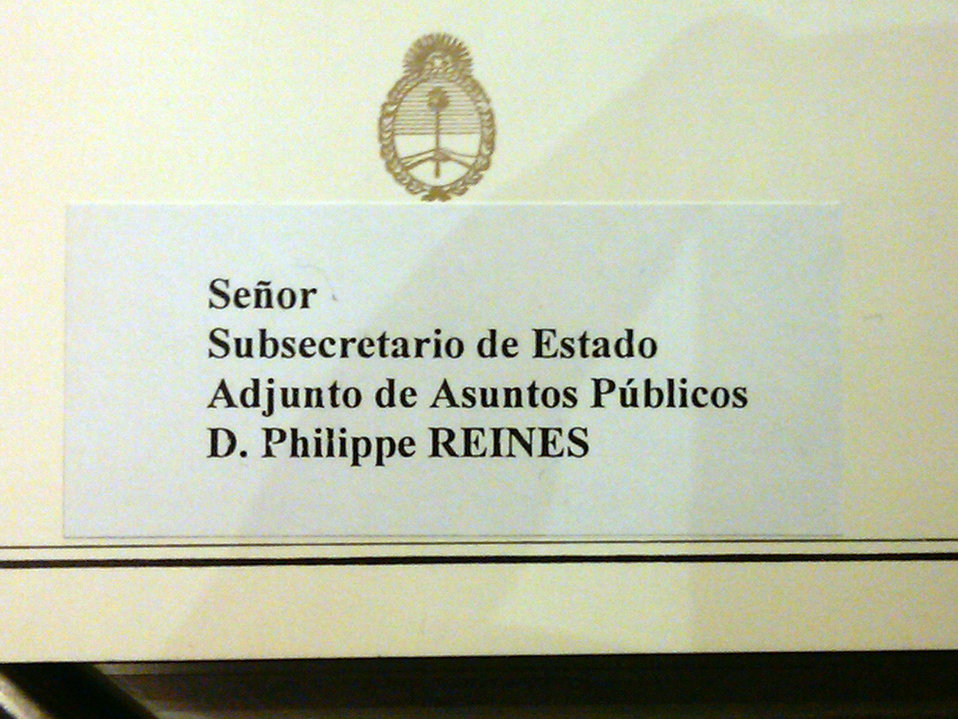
Place card for Philippe Reines at a bilateral meeting between U.S. Secretary of State Hillary Rodham Clinton and Argentine President Cristina Fernández de Kirchner in Buenos Aires, Argentina March 1, 2010.